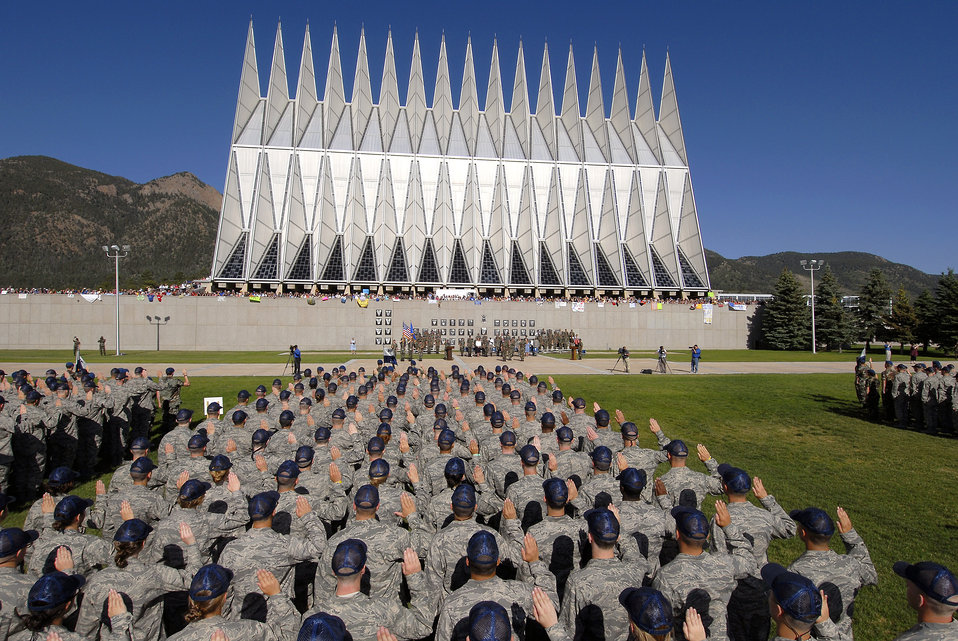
I pledge...

The Class of 2012 recites the Oath of Allegiance during Day Two of the 38 days of basic cadet training June 27 at the U.S. Air Force Academy in Colorado. Basic cadet training prepares the trainees for entry into the cadet wing.